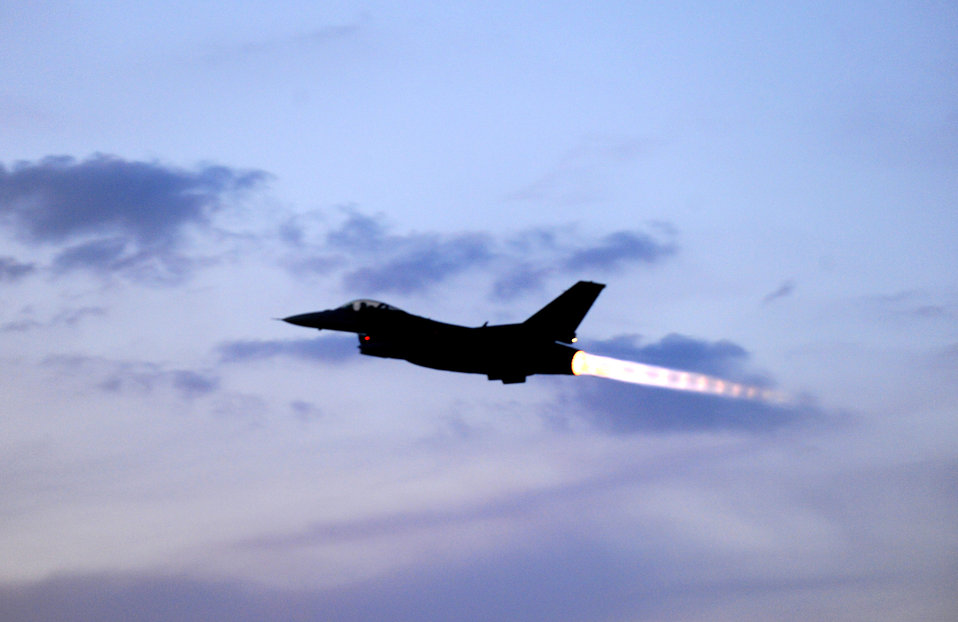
Falcons in Southwest Asia

An F-16 Fighting Falcon pilot from the 480th Fighter Squadron departs May 2, 2011, from Spangdahlem Air Base, Germany, for the unit’s Air Expeditionary Force deployment.